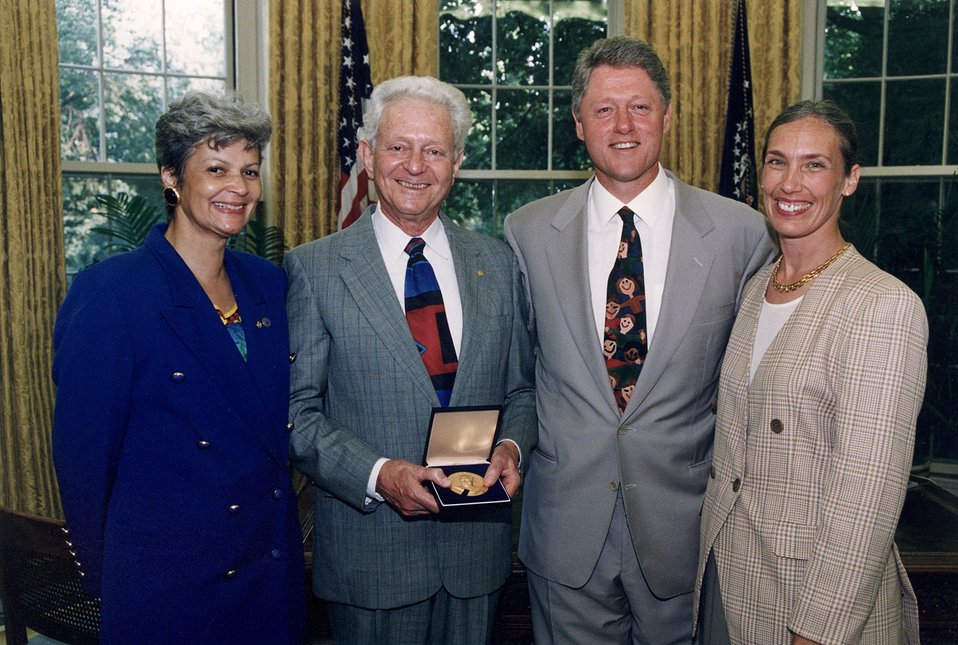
Left to Right:. Secretary of Energy Hazel R. O'Leary, Dr. Leon M. Lederman, President William Clinton, and Mrs. Leon Lederman.